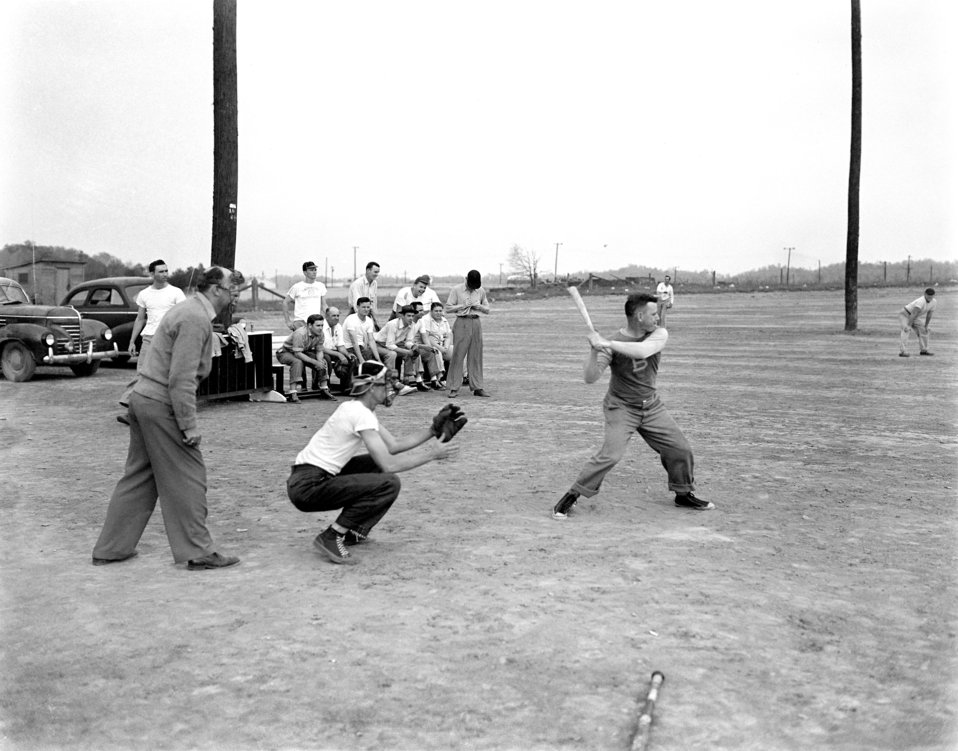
Softball Oak Ridge 1947

3427-2b DOE photo Ed Westcott 4-24-1947 Oak Ridge Tennessee